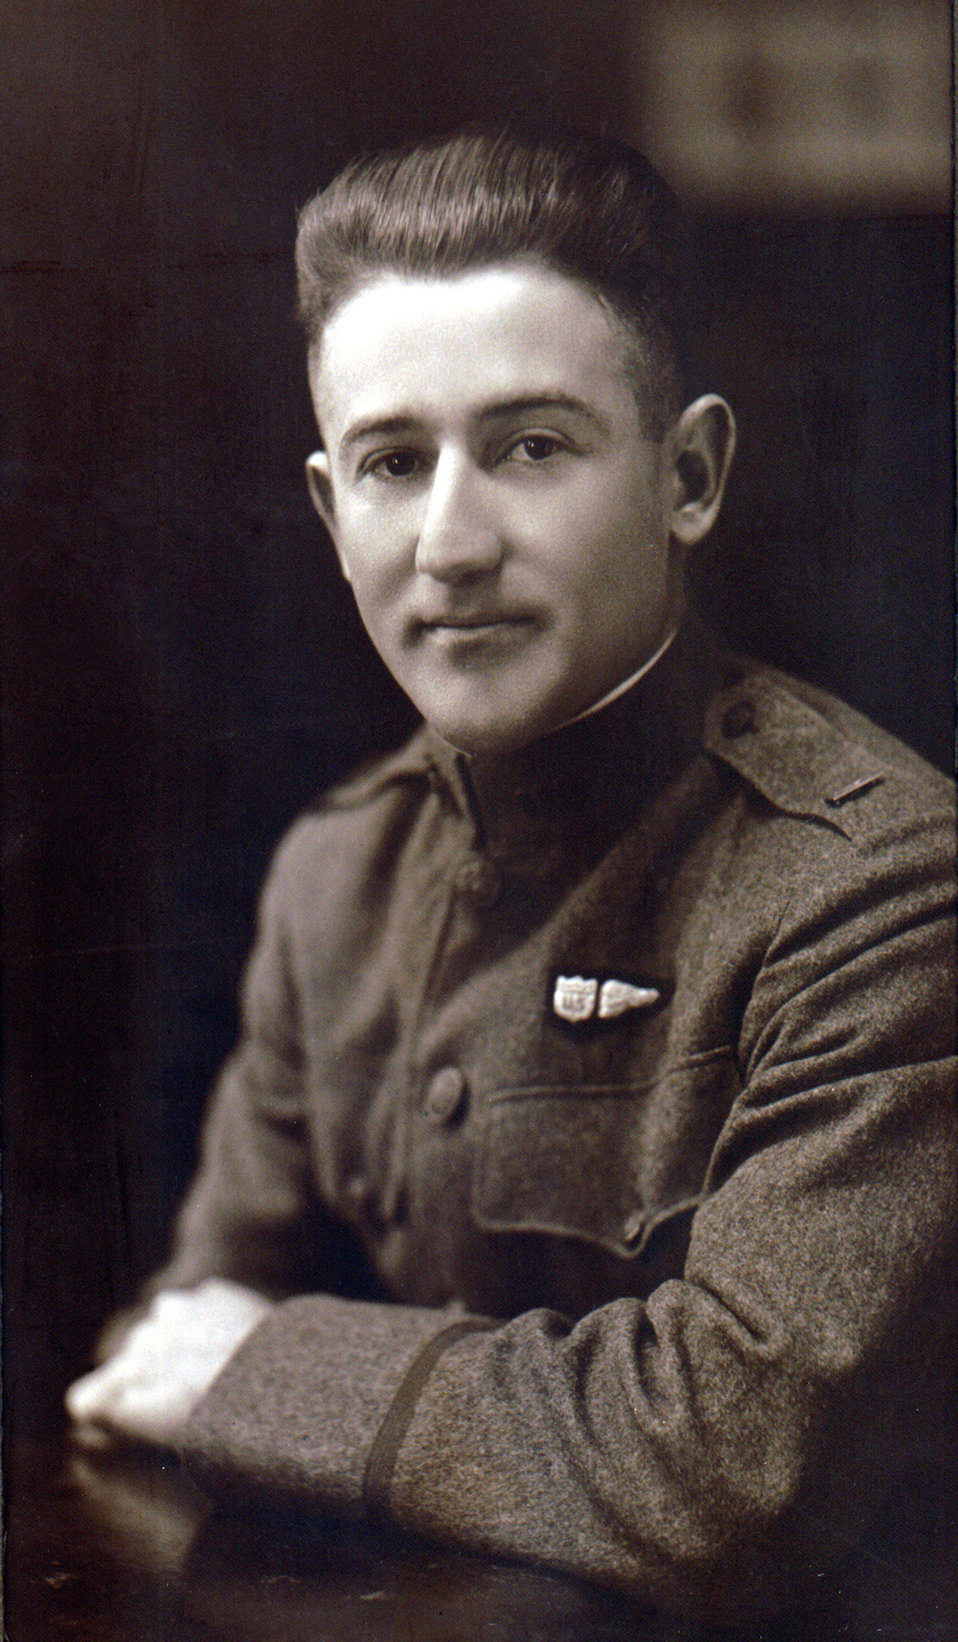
Lt. Samuel R. Keesler, an aerial observer in World War I, is the namesake for Keesler Air Force Base, Miss.